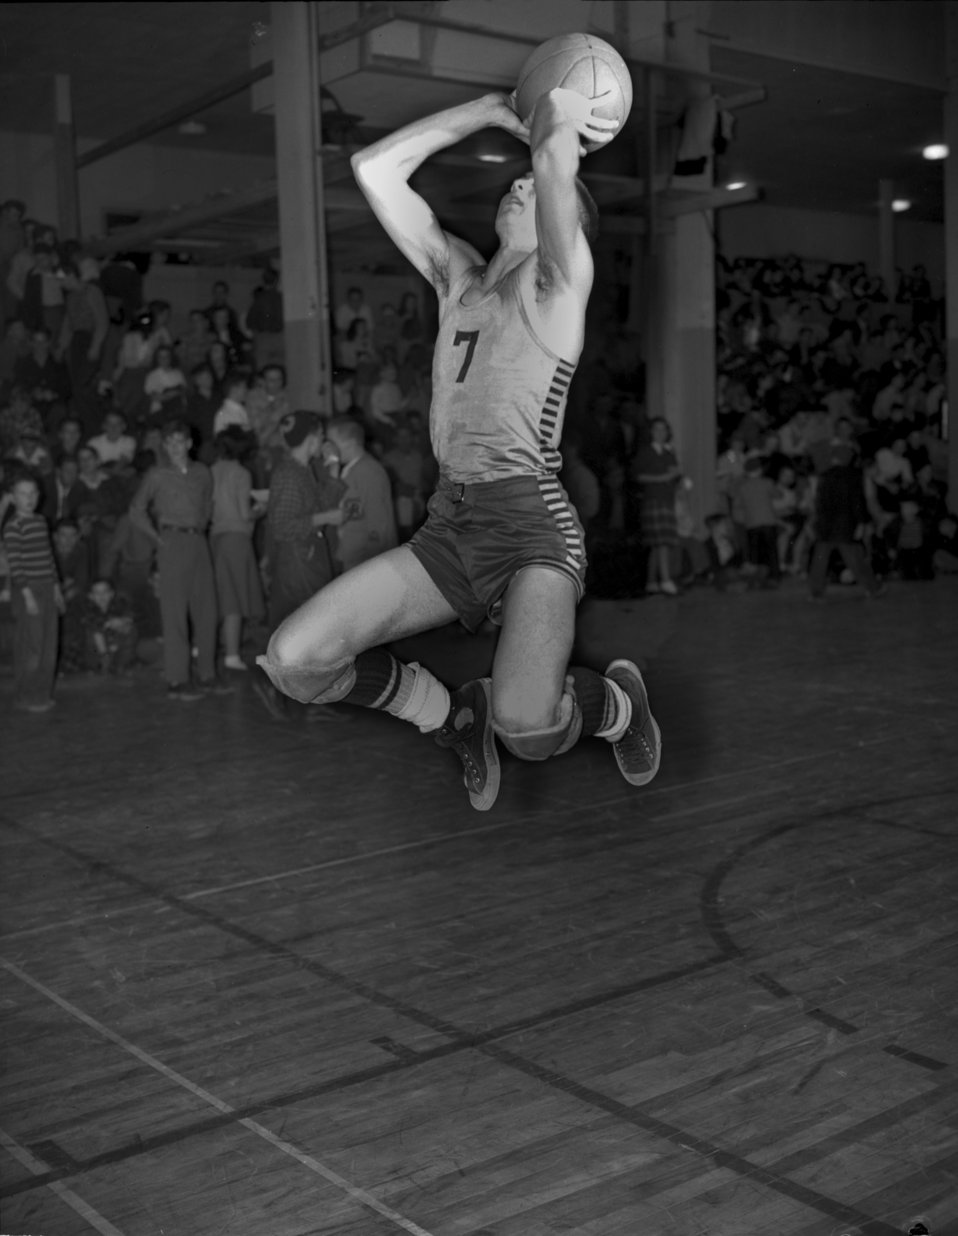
High School Basketball

004305a DOE photo by Ed Westcott
Oak Ridge Tennessee 2-6-1948